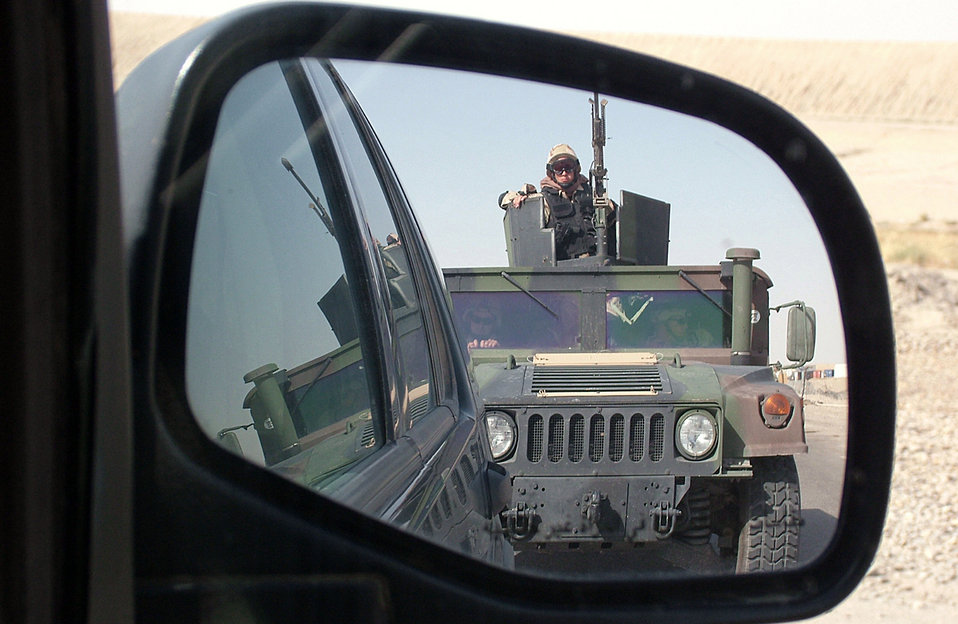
On the lookout

SOUTHWEST ASIA -- Airman 1st Class Joseph Lloyd mans the turret of a vehicle providing protection for a recent convoy to purchase mission-essential supplies for Tallil Air Base, Iraq. He is assigned to the 407th Expeditionary Civil Engineer Squadron's explosive ordnance disposal team.